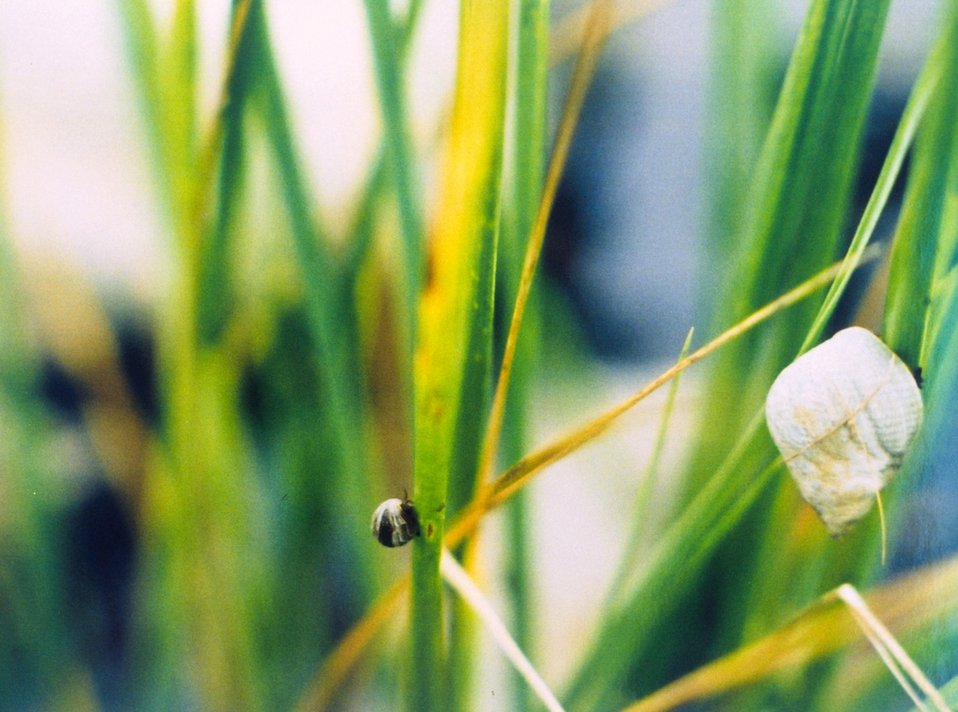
Two types of marsh snails. The one on the right is Littorina littorina.